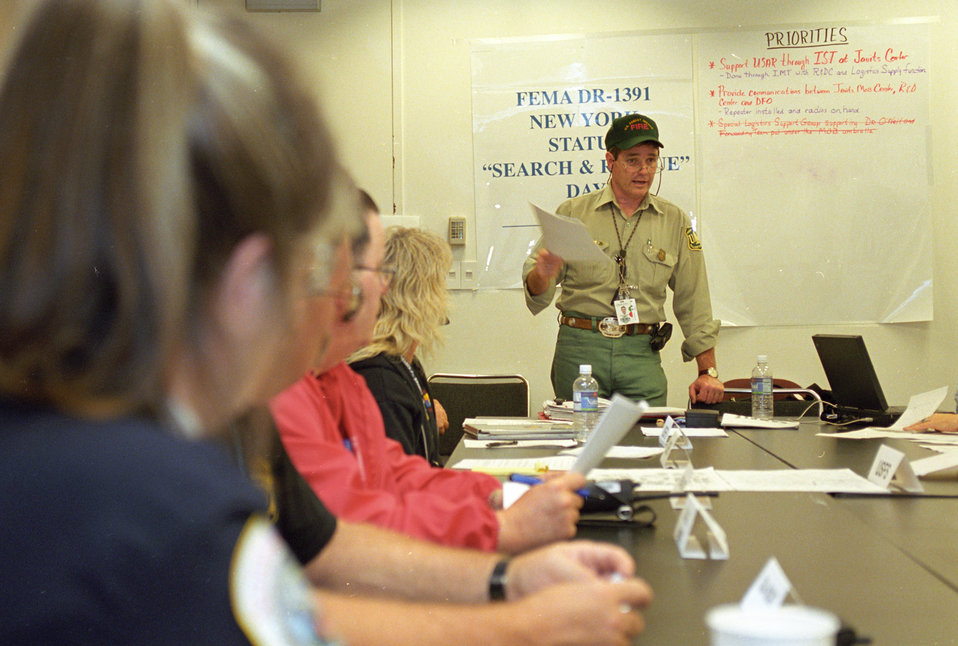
September 11, 2001 terrorists attacked the World Trade Center in New York City, NY, the Pentagon in Arlington, VA., and a field in rural Pennsylvania. After the attacks the U.S. Department of Agriculture (USDA) Forest Service (FS) Incident Management Teams restored communications and provided initial incident command of the World Trade Center and Pentagon Crash sites on September 26, 2001.